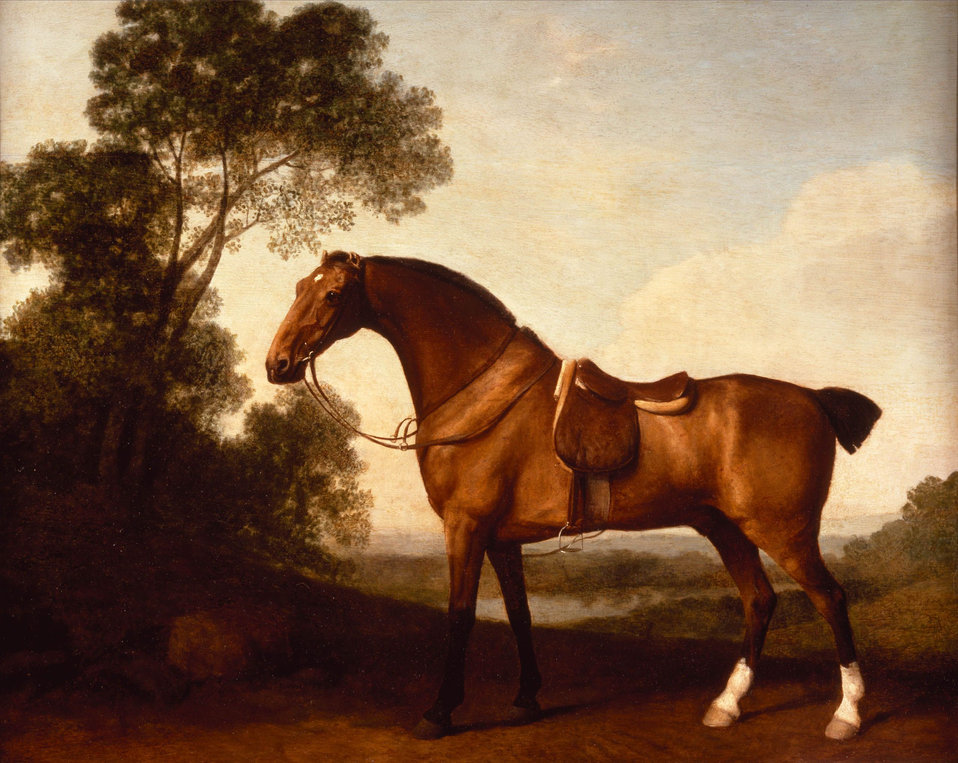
A Saddled Bay Hunter) by George Stubbs